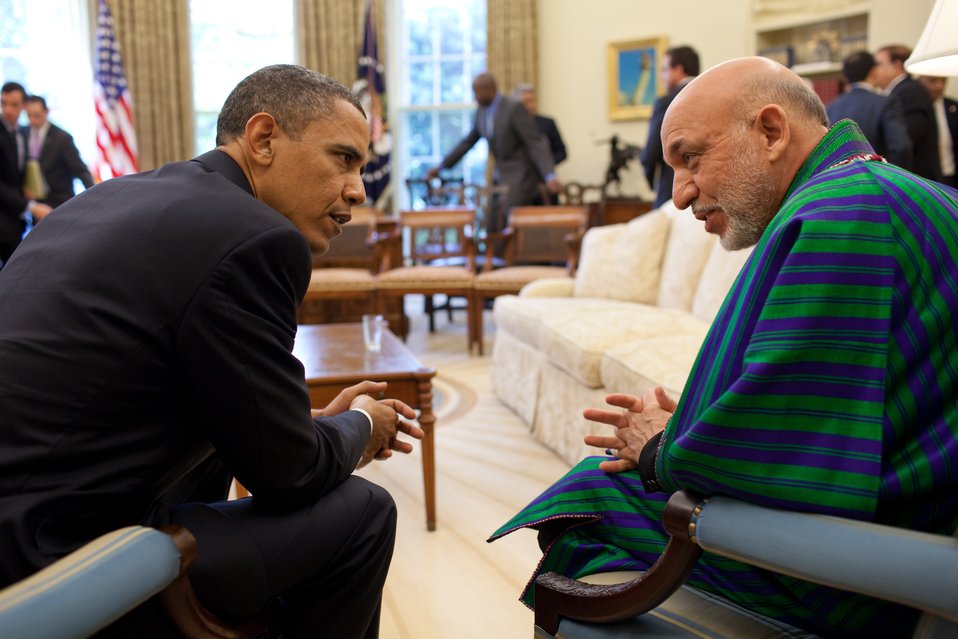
President Obama and Afghan President Karzai Converse

President Barack Obama holds a bilateral meeting with President Hamid Karzai of Afghanistan in the Oval Office in the White House in Washington, D.C., on May 12, 2010. Participants include: Lt. Gen. Douglas (Doug) Lute, Special Assistant for Afghanistan and Pakistan, General Stanley McChrystal, Commander International Security Assistance Force, Secretary of State Hillary Rodham Clinton, Secretary of Defense Robert Gates, National Security Advisor Gen. James L. Jones, Deputy National Security Advisor Tom Donilon, Chairman of the Joint Chiefs of Staff Admiral Mike Mullen, and United States Ambassador to Afghanistan Karl Eikenberry. Afghans participants include: Dr. Zalmai Rassoul, Dr. Rangin Spanta, Said Tayeb Jawad, Gen. Rahim Wardak, Mohammed Haneef Atmar, Dr. Hazrat Zakhilwal, Mohammed Asif Rahimi, Dr. Ashraf Ghani Ahmadzai, and Mahammad Masoom Sanekzai.